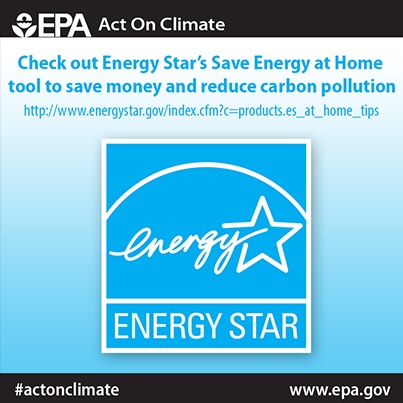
Check out the @ENERGYSTAR Save Energy at Home Tool for tips on how to save energy and cut carbon pollution in each room of your home. #ActOnClimate http://www.epa.gov/earthday/actonclimate/